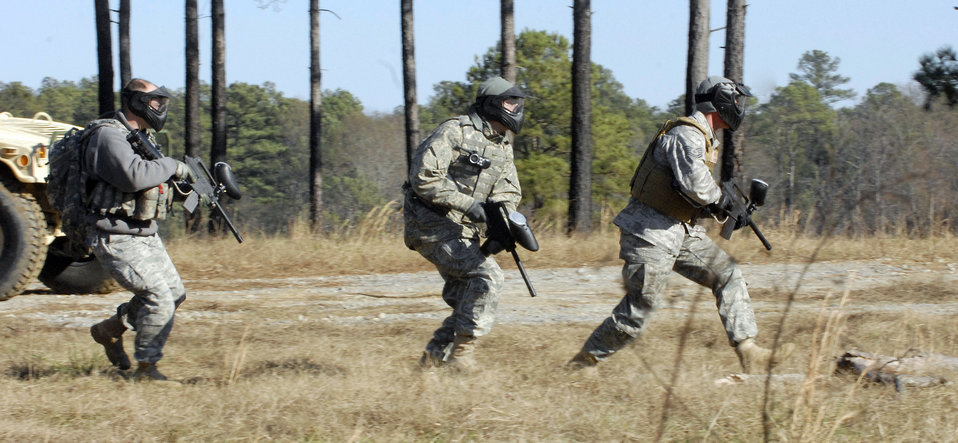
Patriot exercise teaches ISR skills to enhance situational awareness

Students simulate clearing a village Dec. 11, 2009 during Patriot 7, a week-long exercise using intelligence, surveillance and reconnaissance to support irregular warfare missions. About 30 Air Force, joint and coalition trainees conducted integrated sensor,
aircraft and counterterrorism training to learn how to make more dynamic decisions on the battlefield.